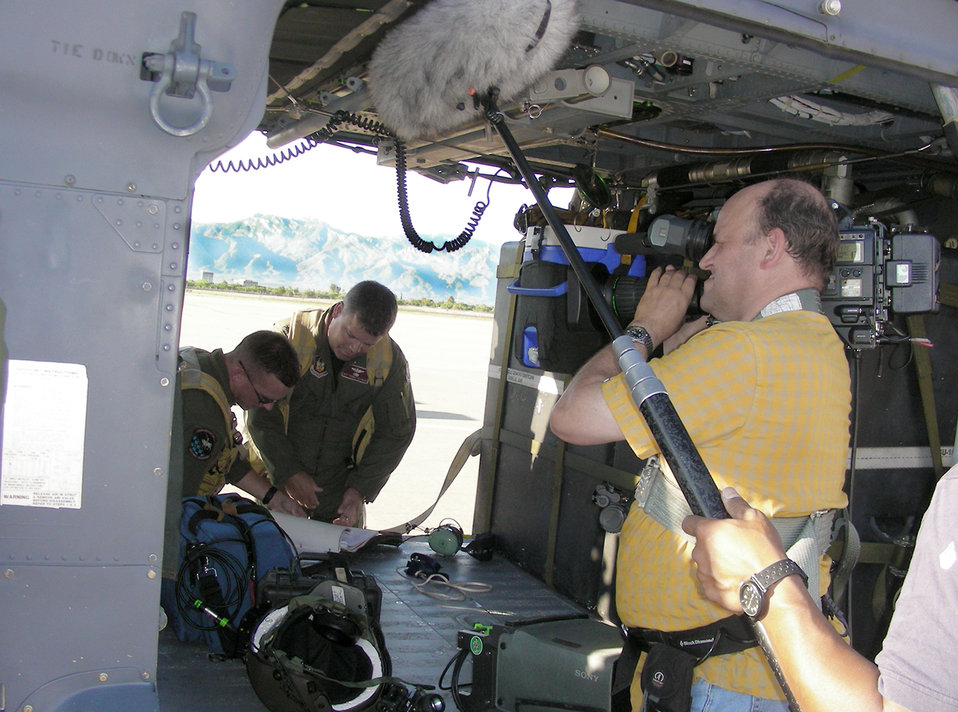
Air Force Reserve combat search and rescue Airmen are featured in a newly released documentary titled,